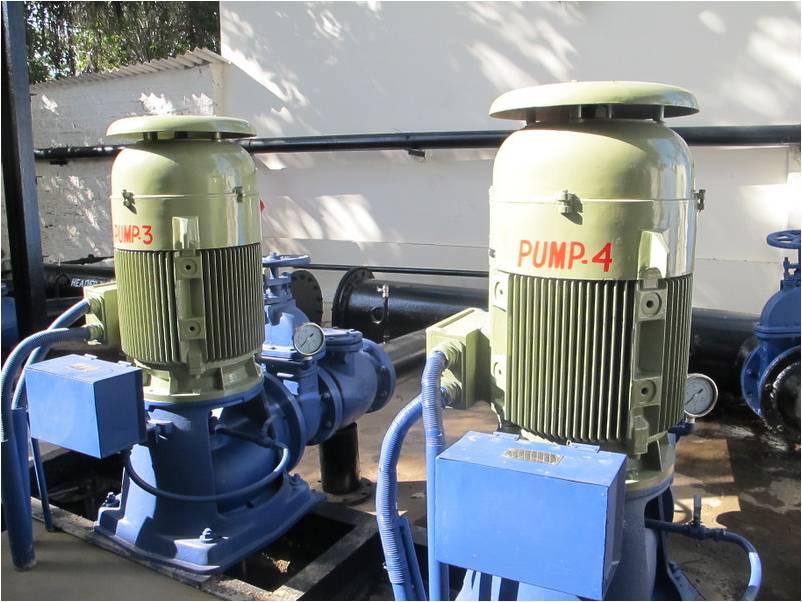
Latest equipment will help KWandSB pump water more efficiently